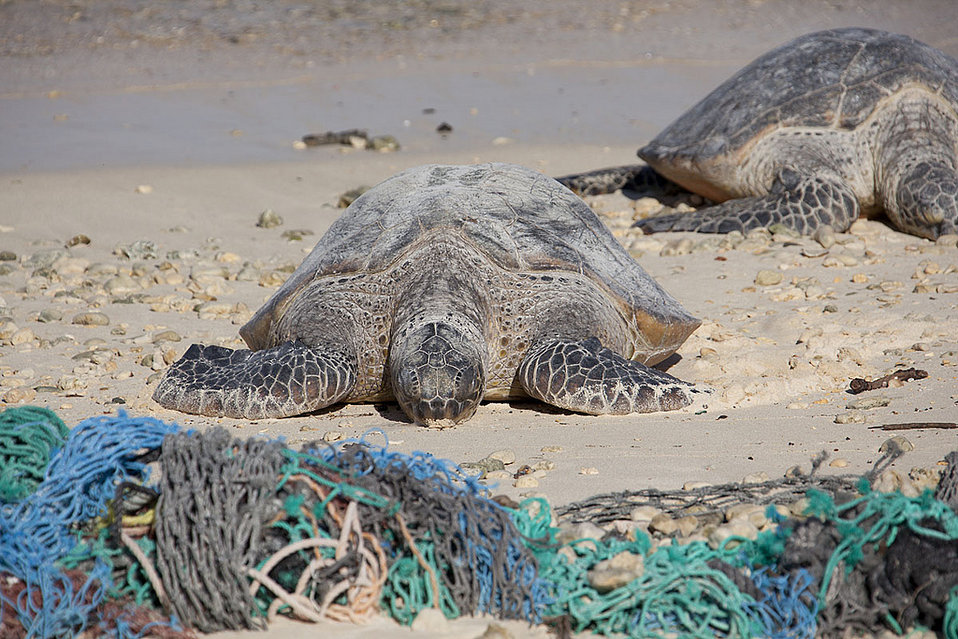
green turtles amid marine debris

Marine debris poses a hazard to these threatened green turtles, as well as to feeding seabirds and other wildlife. Many tons of marine debris wash ashore on the atoll every year.
Midway Atoll National Wildlife Refuge,
Papahānaumokuākea Marine National Monument
January 2012